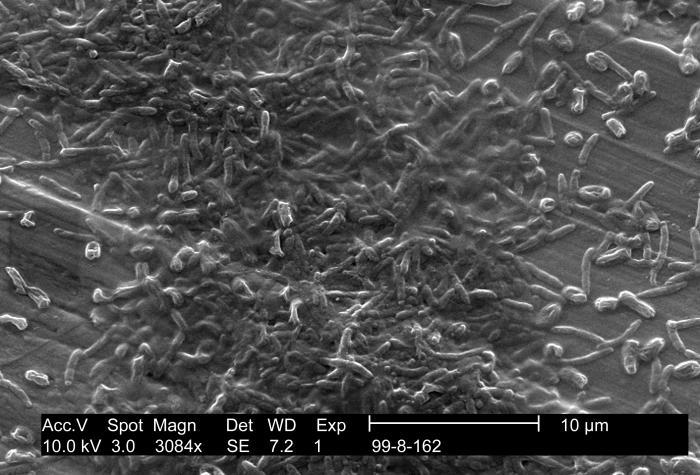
This scanning electron micrograph (SEM) depicts findings uncovered during Legionella pneumophila research, which investigated the association of amoebae when present with L. pneumophila bacteria existing on potable water biofilms; Mag. 3084x. Shown here are L. pneumophila as well as other unidentified bacteria.